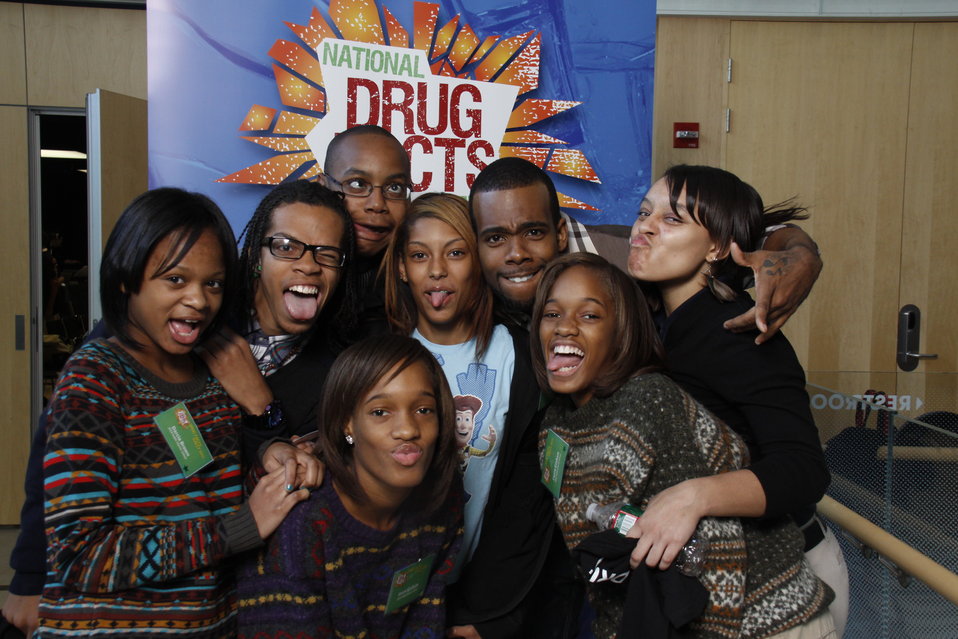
NDFW Mentor Event